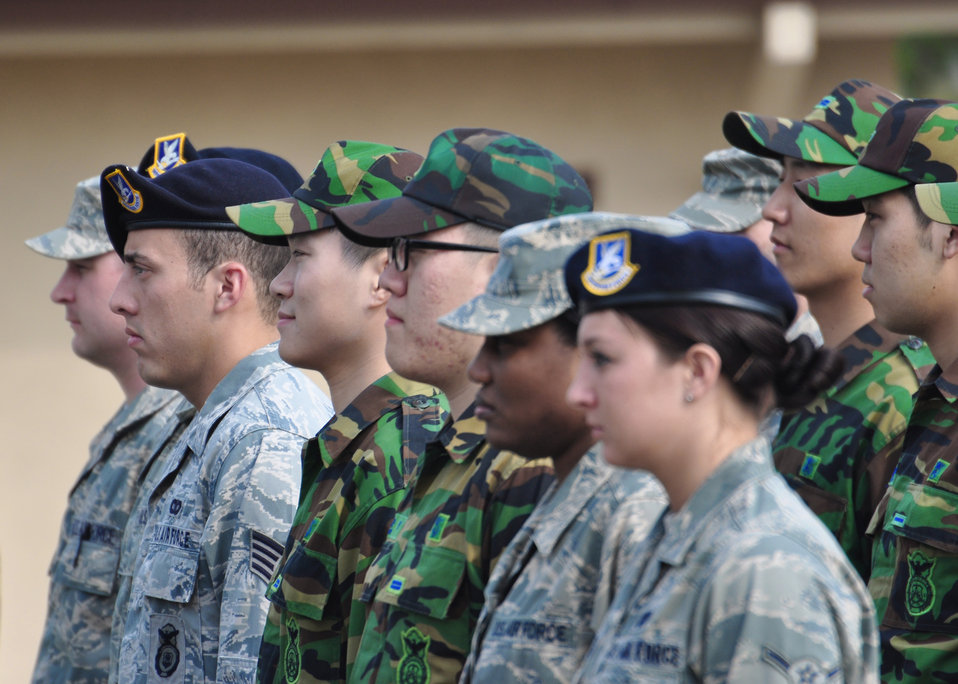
Law enforcement members honored during Police Week

Airmen celebrated National Police Week with a ceremonial retiring of two Airmen who were killed in the line of duty and other events at Osan Air Base, South Korea. In 1962, President John F. Kennedy signed a proclamation which designated May 15 as Peace Officers Memorial Day and the week in which that date falls as Police Week. Thousands of law enforcement agencies around the world celebrate the week to remember those who have been killed in the line of duty.